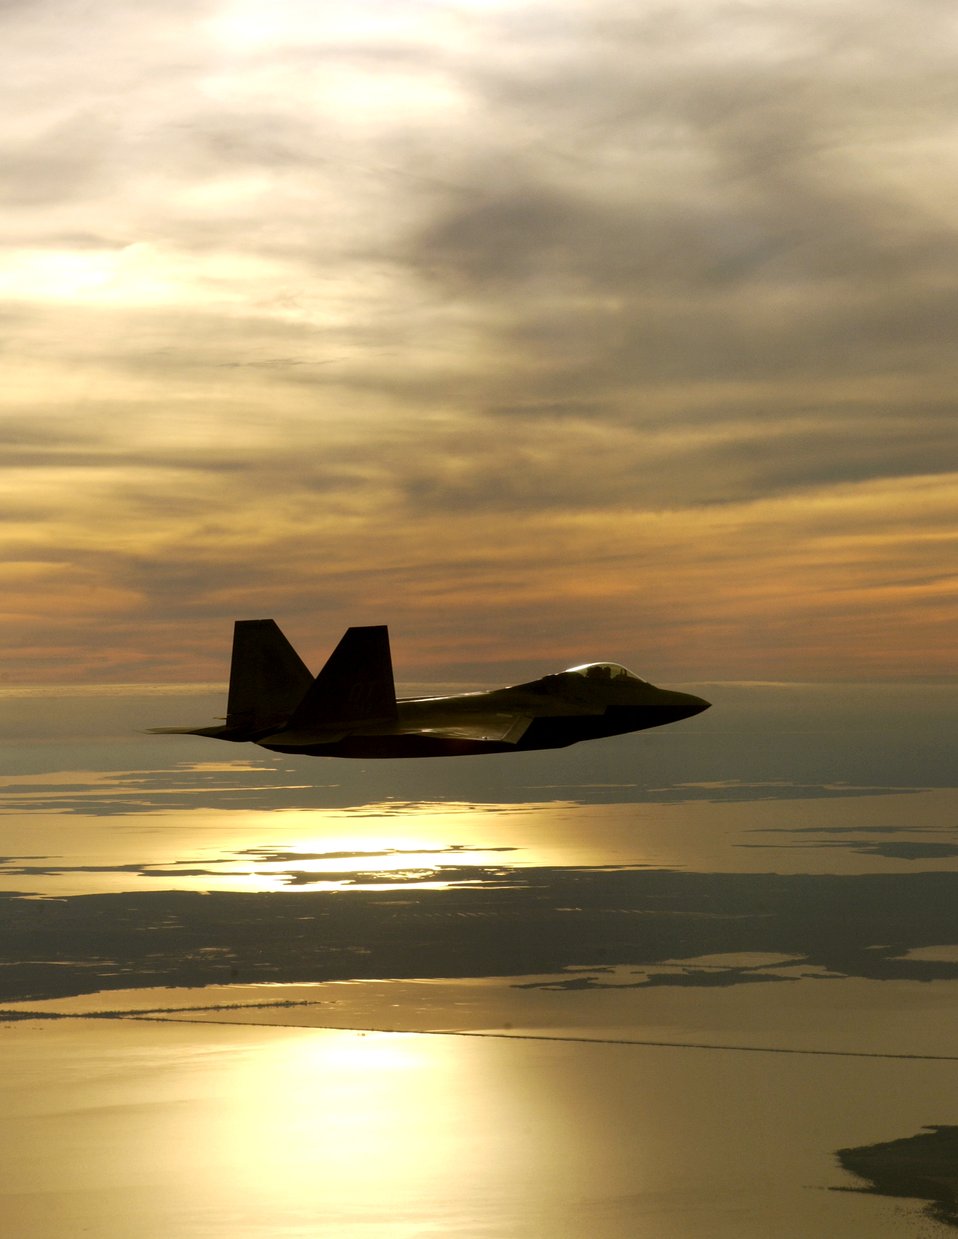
Raptor meets new challenges

An F-22 Raptor from Nellis Air Force Base, Nev., flies over Kill Devil Hills, N.C.